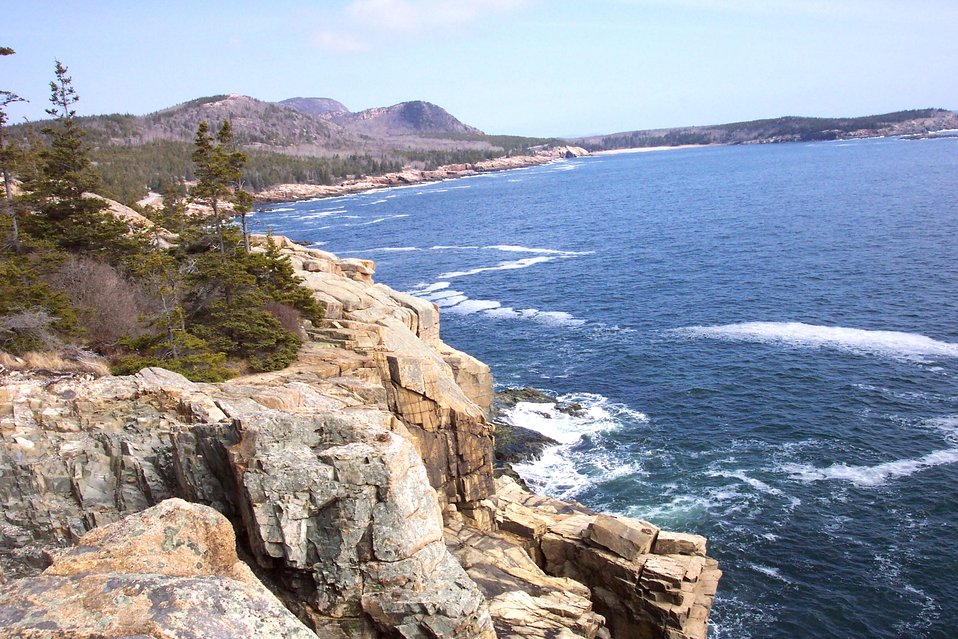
Looking north to the Sand Beach area from the Otter Cliffs.